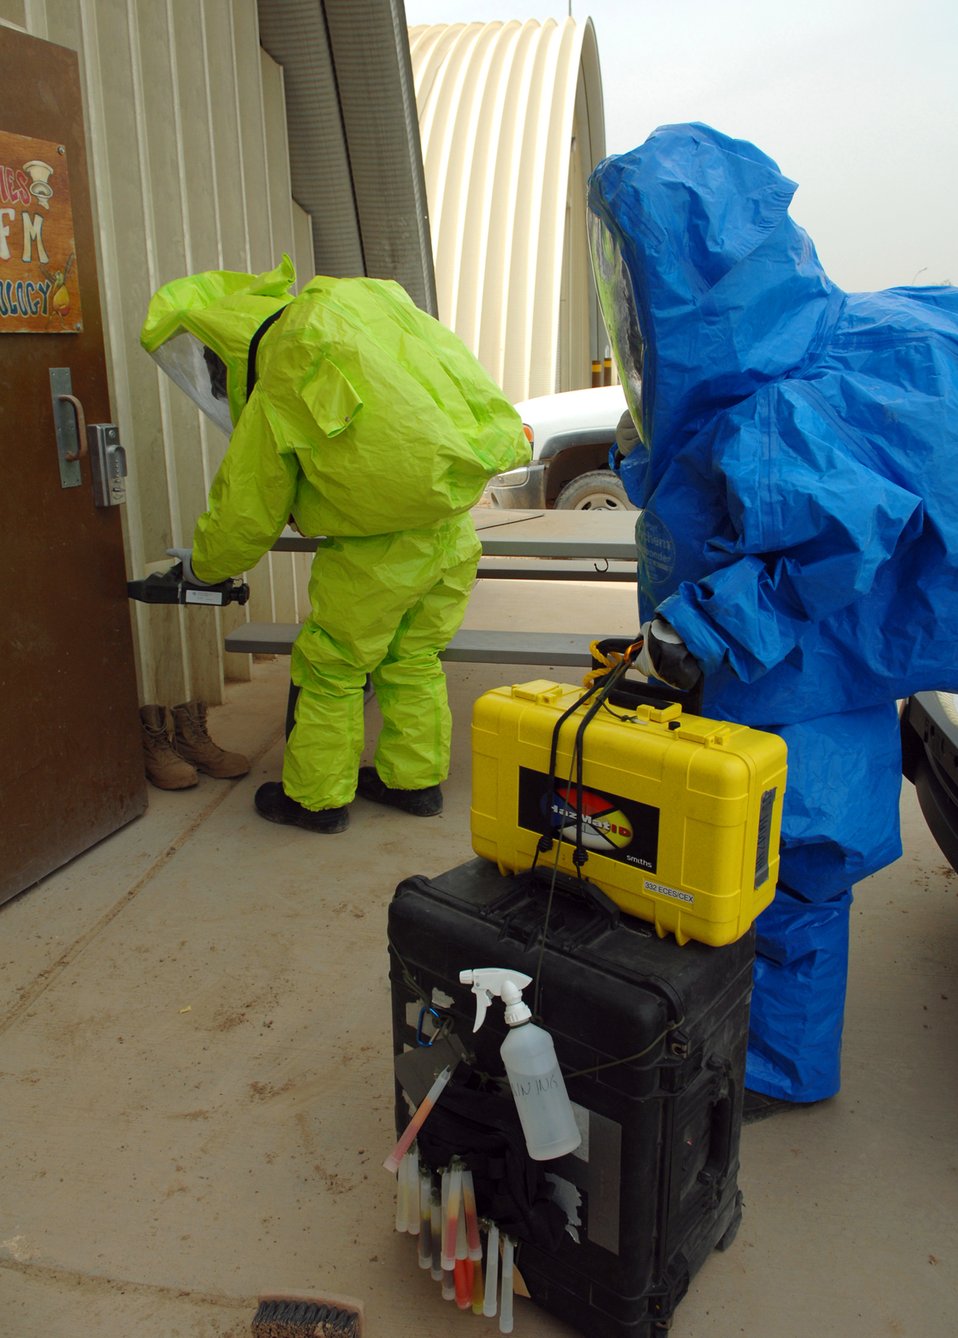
Airman's packaging idea carves hours from hazmat response

Senior Airmen Krista McVicar and Michael Blair, 332nd Expeditionary Civil Engineer Squadron emergency management equipment technicians at Joint Base Balad, Iraq, respond during a battle drill to an unidentified substance in a facility here. Emergency managers must identify questionable substances and employ the proper procedures needed to secure the area. Airman McVicar is deployed from Davis-Monthan Air Force Base, Ariz.; Airman Blair is deployed from McGuire AFB, N.J.